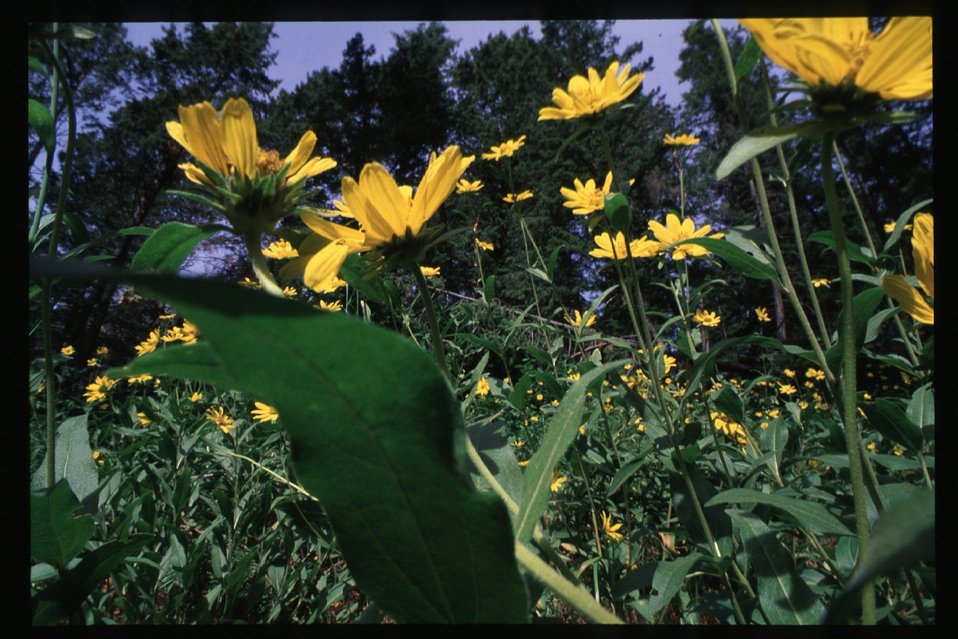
Recreation Scenic Biker Shoshone Field Office USRD Upper Snake River District Bald Mountain Trail Wildflowers